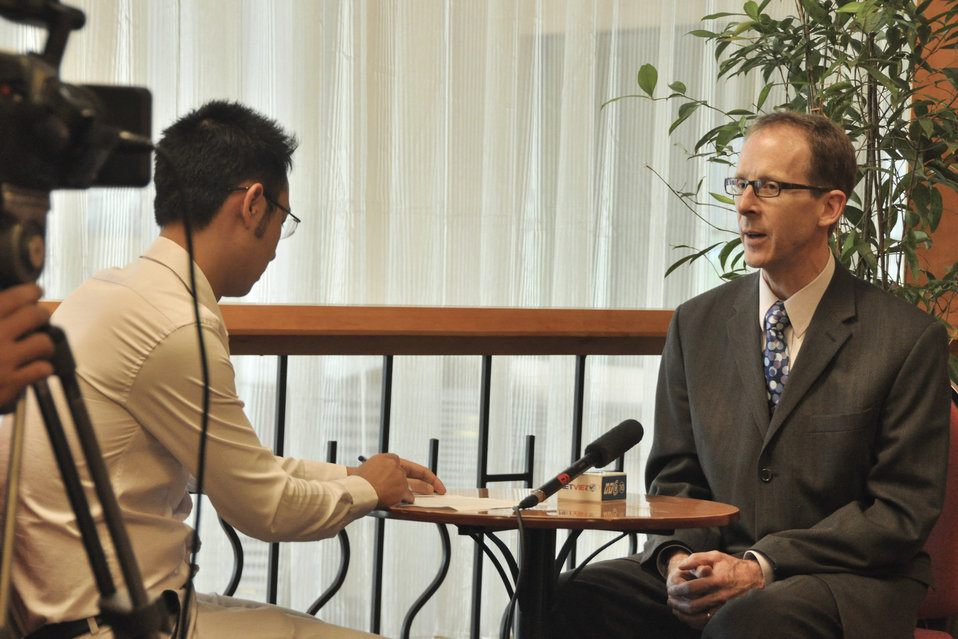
USAID Vietnam Mission Director Joakim Parker answers interview questions from VTC10

Hanoi, May 6, 2014.